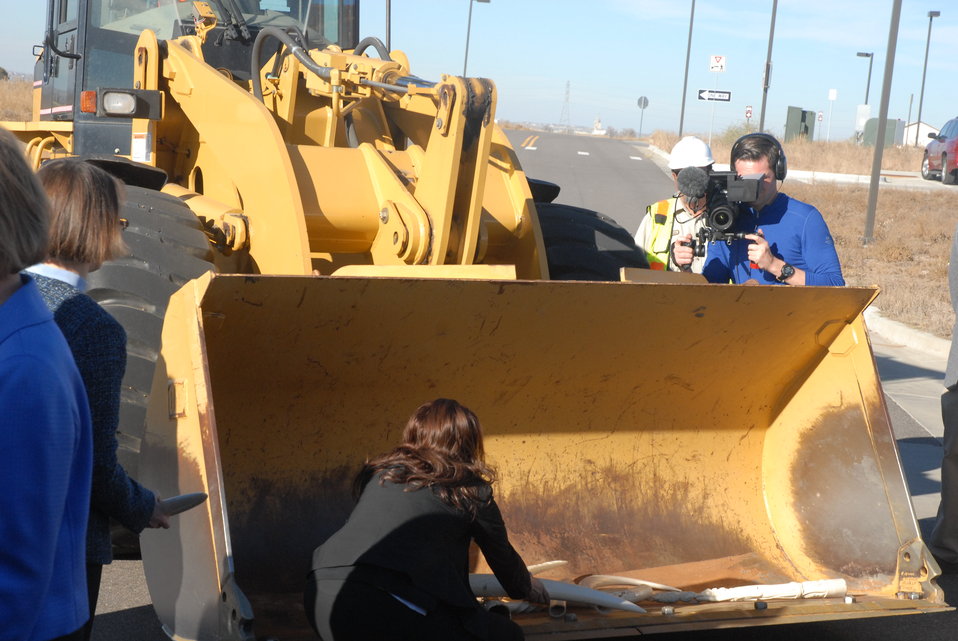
Joely Fisher, actress and IFAW Ambassador, provides symbolic gesture at the U.S. Ivory Crush.